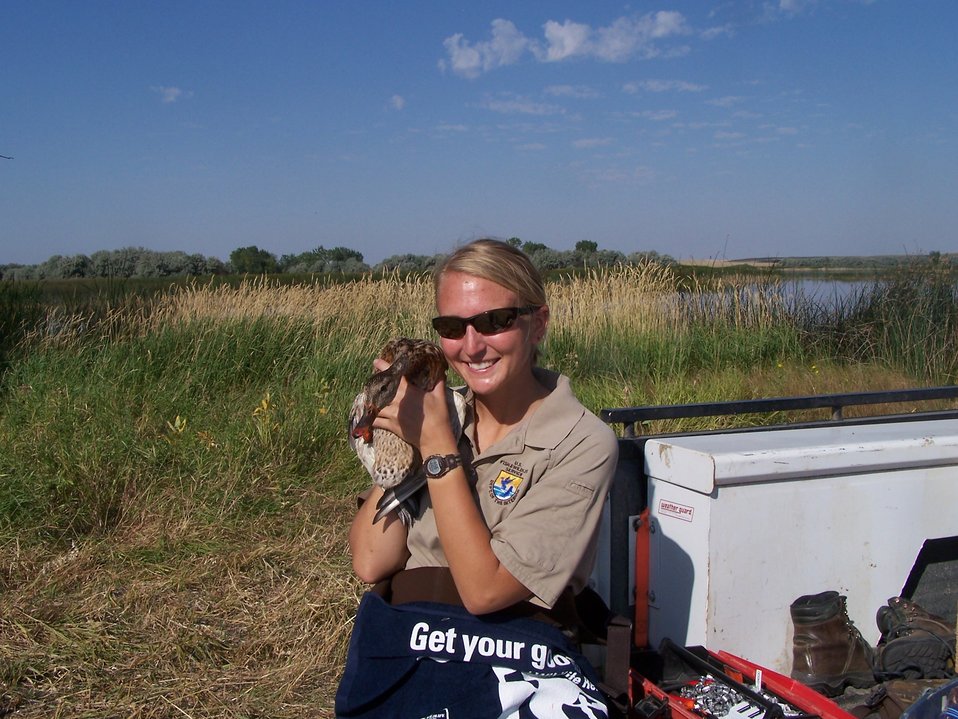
Get Your Goose On! - While Trapping Ducks

Wildlife Biologist, Jessica Larson, Gets Her Goose On while banding ducks at Bowdoin NWR.